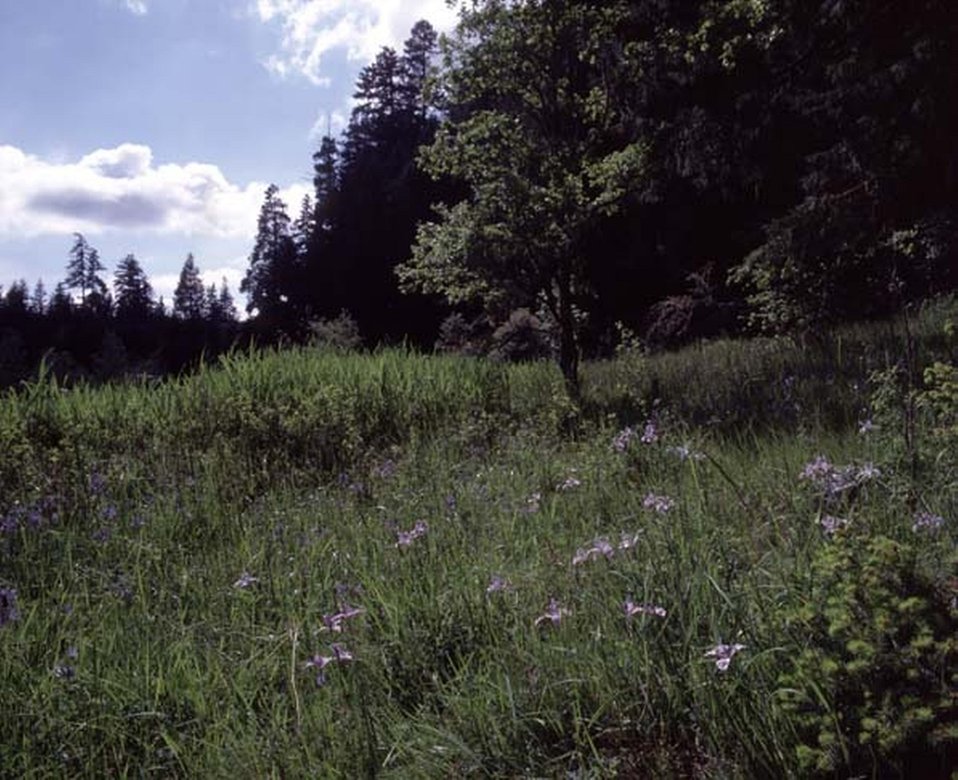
Scenic view of McGowen Meadow.